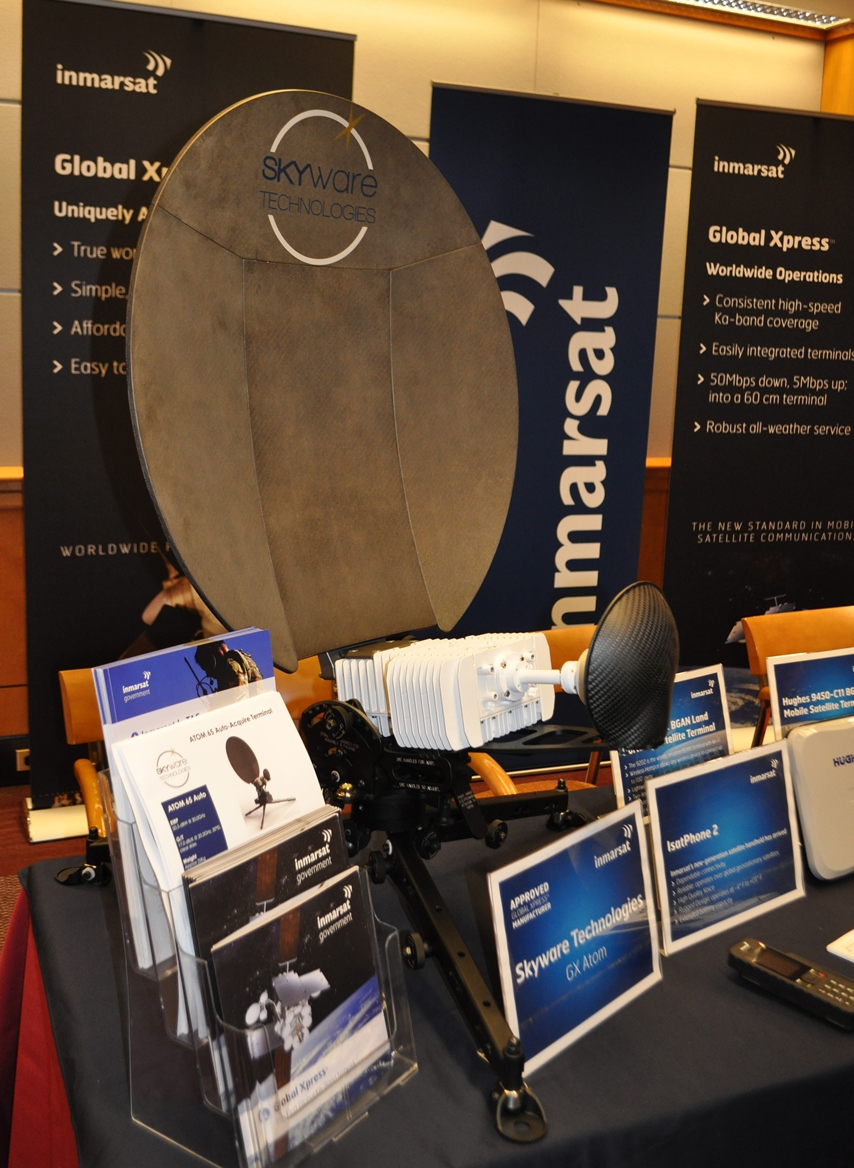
5.14.2014 Satellite Technology Demonstration

Satellite Technology Demonstration at FCC